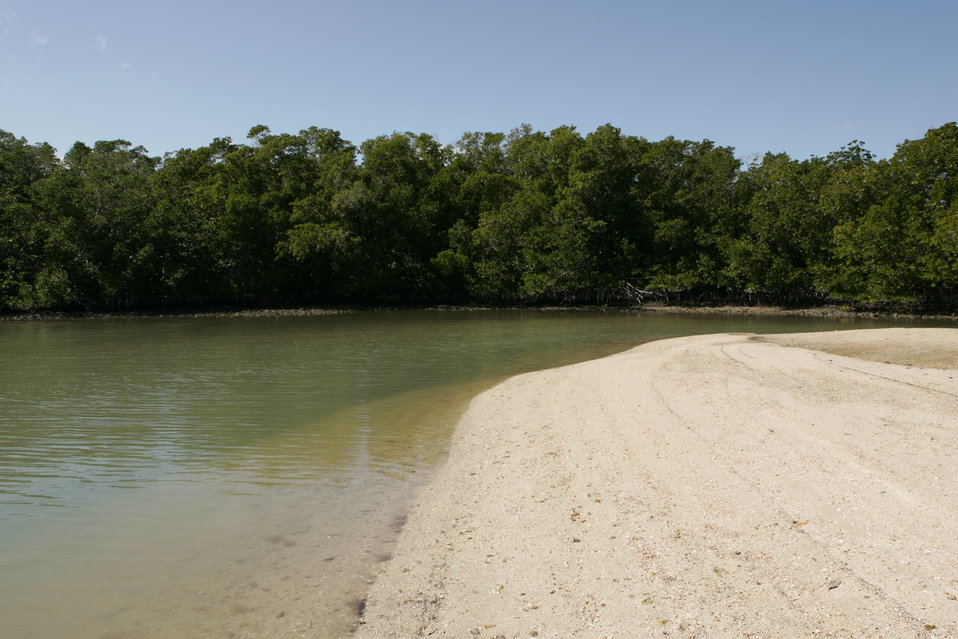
Beach dune at shore line

Beach sand dune at water line with mangrove trees on island in background.